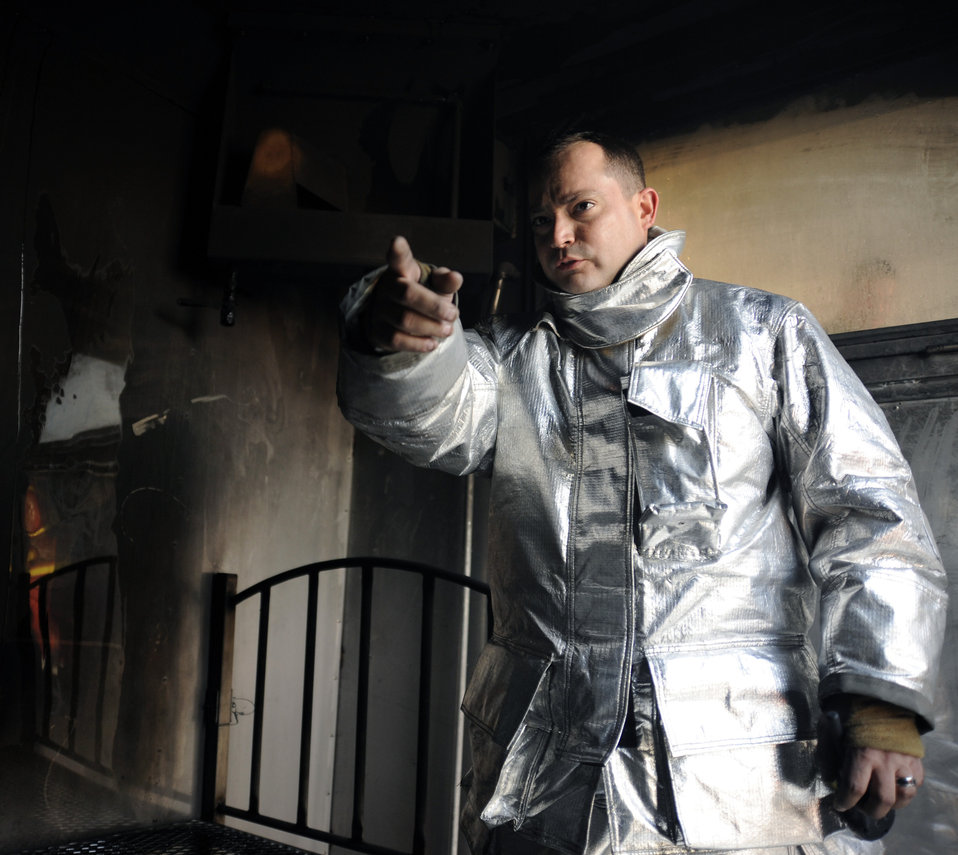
AF firefighters relocate, expand Iraqi fire training course

Tech. Sgt. Brian Partido explains the different features of the mobile live fire training unit in Baghdad, Iraq, Dec. 24. Sergeant Partido is a fire and rescue advisor, and is deployed from the 19th Civil Engineer Squadron, Little Rock Air Force Base, Ark.